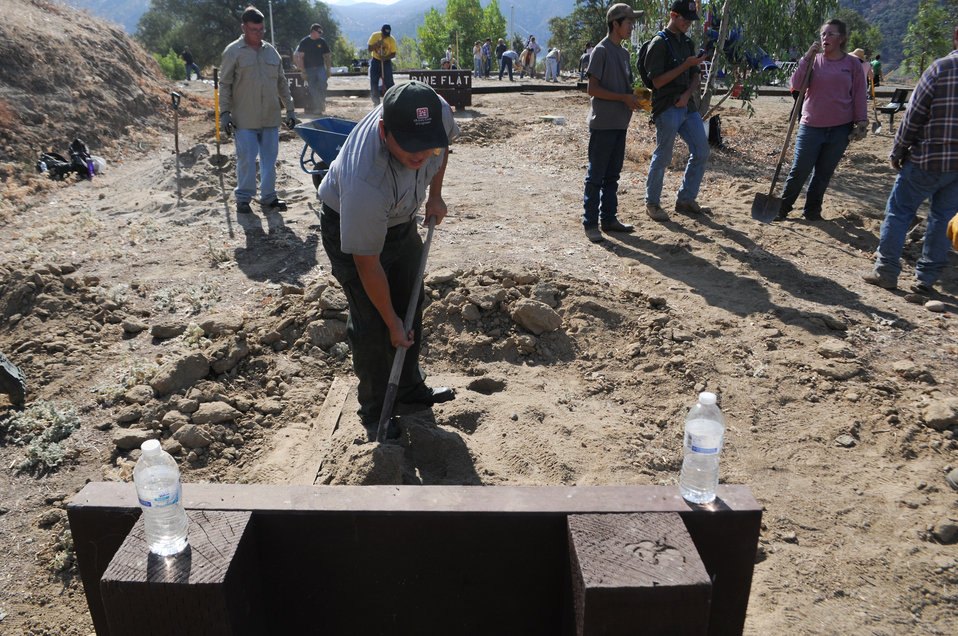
National Public Lands Day at Pine Flat Lake

U.S. Army Corps of Engineers park ranger Mongzong Xiong puts the final touches on a new horseshoe pit at Pine Flat Lake near Sanger, Calif., Sept. 24. With the help of more than 60 volunteers, Pine Flat park rangers planted trees and built a new sand volleyball court and two horseshoe pits at the park in celebration of National Public Lands Day. Pine Flat was one of seven U.S. Army Corps of Engineers Sacramento District recreation parks that participated in the event.